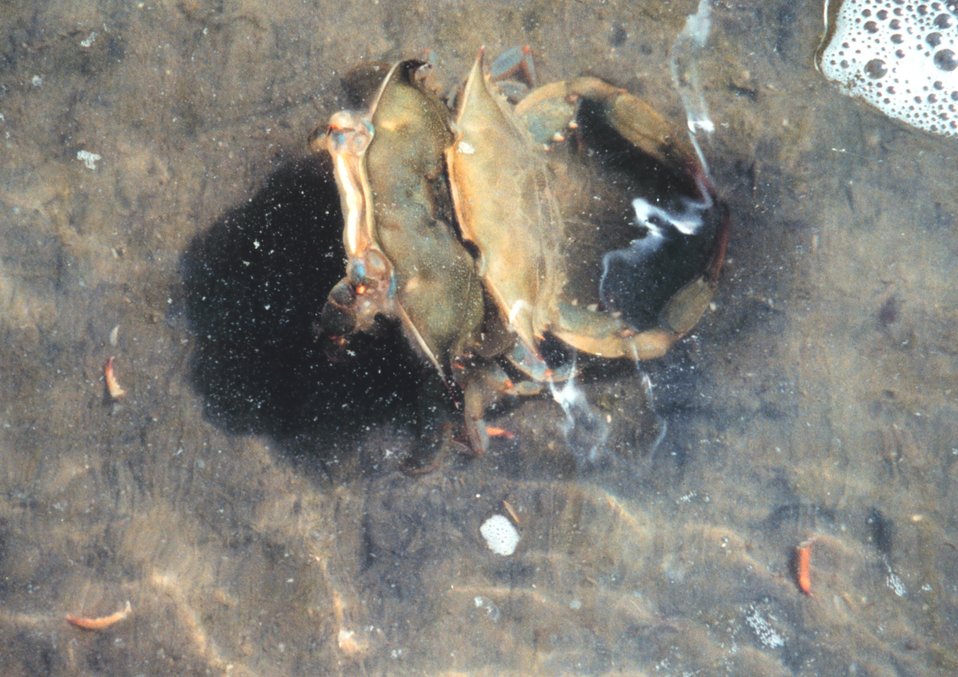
Photo #5 of 8. Having reached the 'buster' molt stage, a Maryland blue crab , Callinectes sapidus, sheds its shell. The genus and species mean tasty beautiful swimmer.